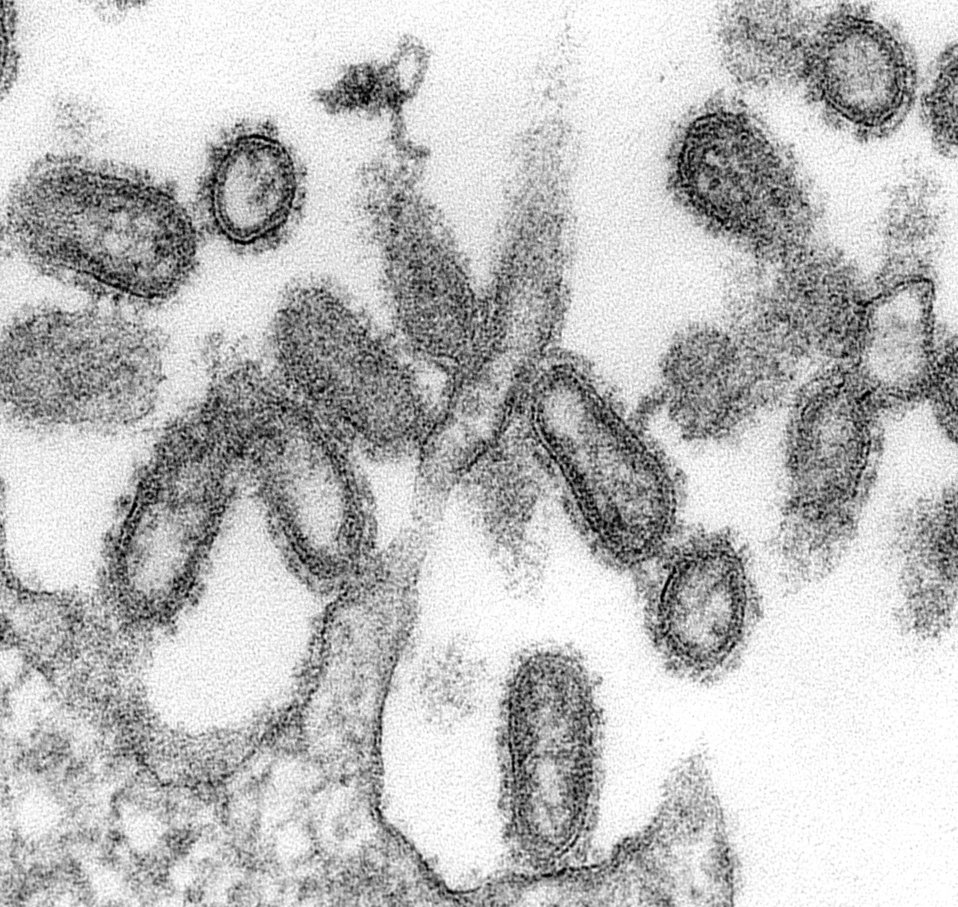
This transmission electron micrograph (TEM) of an ultra-thin specimen revealed some of the ultrastructural morphologic features seen in 1918 influenza virus virions. The prominent surface projections on the virions are composed of either the hemagglutinin, or neuraminidase type of glycoproteins. Composed of what looked like dots or tubules, was a dense envelope known as a 'capsid', which surrounded each virion's nucleic acid constituents.